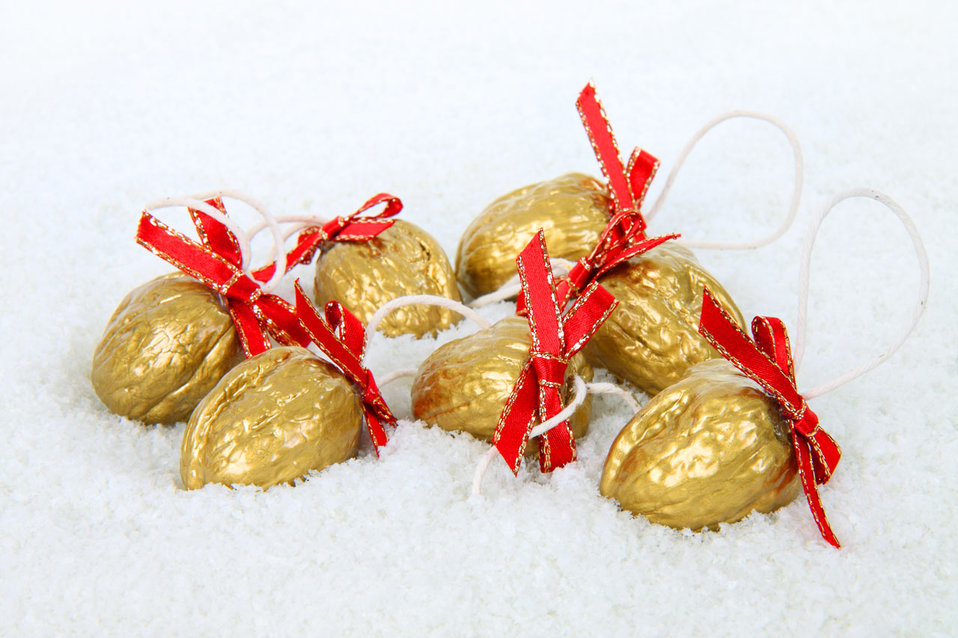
Golden christmas decoration

Golden nuts with red ribbon in snow.